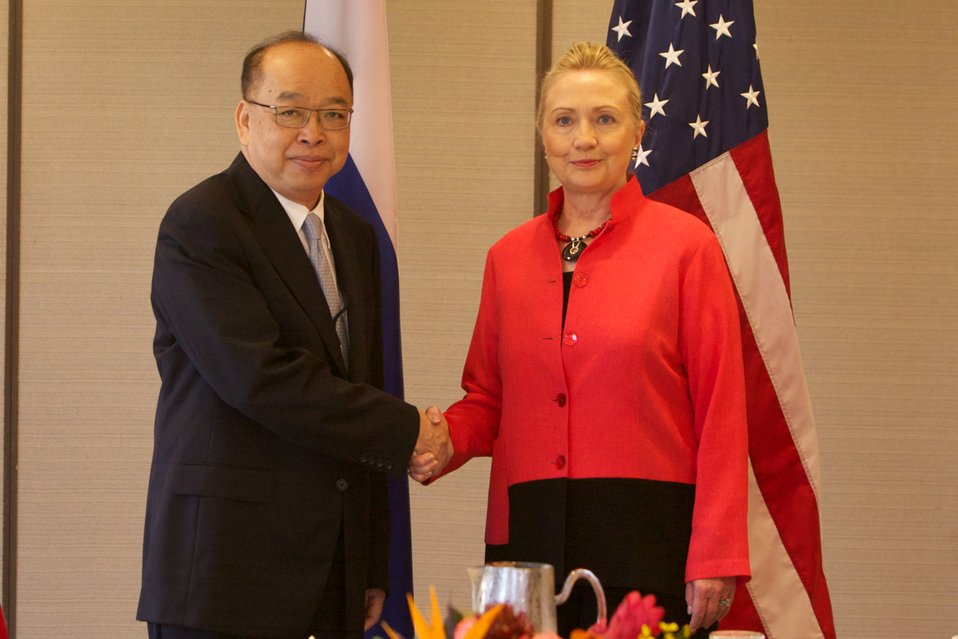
Secretary Clinton Meets With Thai Foreign Minister Tovichakchaikul

U.S. Secretary of State Hillary Rodham Clinton meets with Thai Foreign Minister Surapong Tovichakchaikul in Bangkok, Thailand, on November 16, 2011.